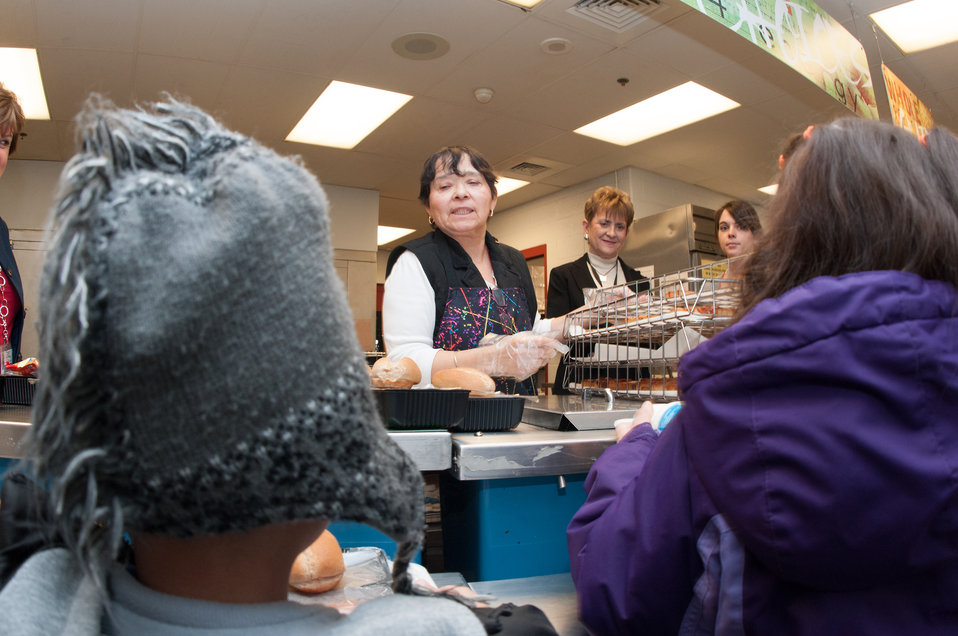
Harmony Hills Elementary School café worker Carmen Mendez, worked hours to prepare the lunchtime meals and now has to work fast to ensure the students get their lunch selections onto their trays and head to their tables in about 10 minutes, in Silver Spring, MD, on Thursday, March 7, 2013. Harmony Hills’ 640 students spend about 25 minutes in the cafeteria. The process requires a choreographed procession of children moving to and from the cafeteria. Earlier in the day, the students select their menu items and know what to choose when in line. Today’s entrée items are reduced fat and reduced salt whole-wheat pizza, spicy chicken patty, salad and peanut butter and jelly sandwich. Department of Agriculture (USDA) Food and Nutrition Service (FNS) administers several programs that provide healthy food to children including the National School Lunch Program, the School Breakfast Program, the Child and Adult Care Food Program, the Summer Food Service Program, the Fresh Fruit and Vegetable Program, and the Special Milk Program. Administered by State agencies, each of these programs helps fight hunger and obesity by reimbursing organizations such as schools, childcare centers, and after-school programs for providing healthy meals to children. Harmony Hills participates in the Maryland Meals for Achievement (MMFA), In-Classroom breakfast program, the fresh fruit and vegetable program, and the summer food service program. Learn more by visiting www.fns.usda.gov and twitter @USDANutrition.